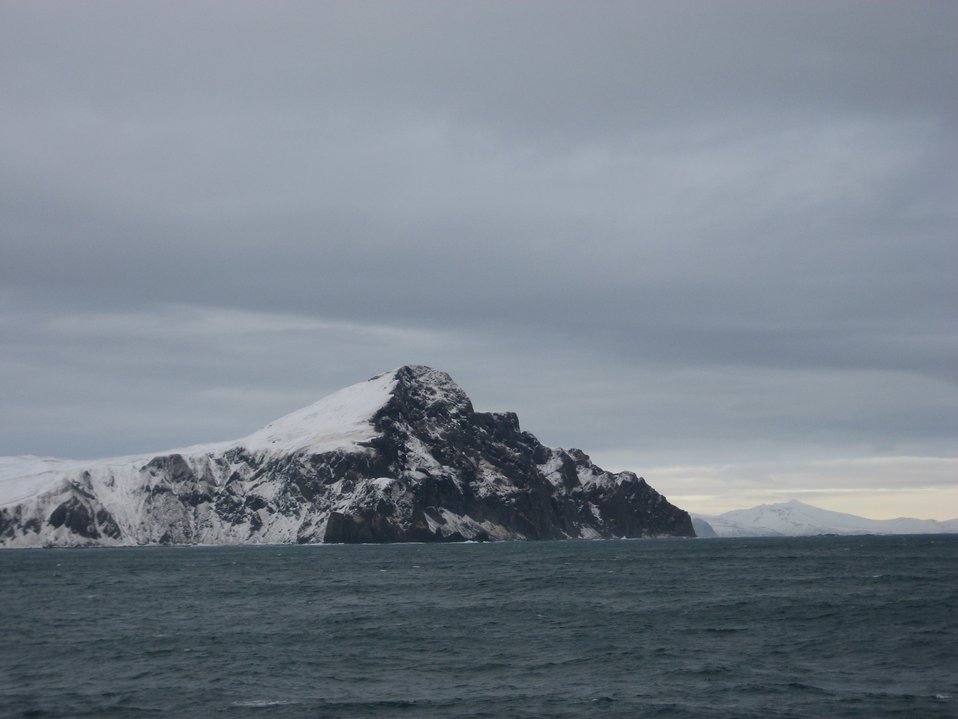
An ironbound coast along the Alaska Peninsula.